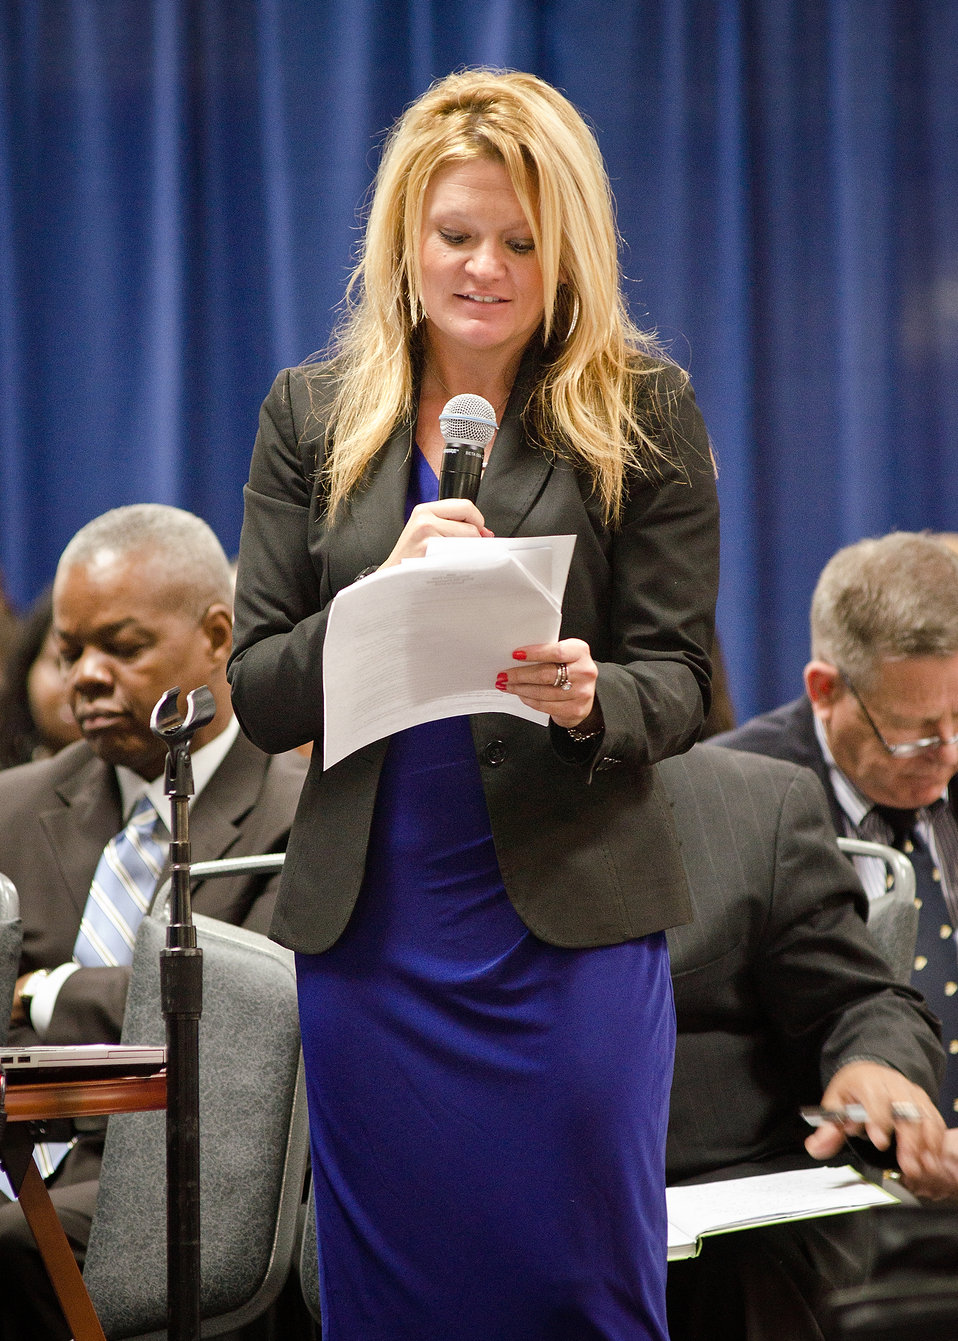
U. S. Department of Agriculture (USDA) Communications Director, Departmental Management, Administrative Solutions Project Jamie Wadzink reads a question emailed to Agriculture Secretary Tom Vilsack about the about the Blueprint for Stronger Service Initiative, during the Ask The Secretary event held in the South Building Cafeteria, in Washington, D.C., on Wednesday, March 21, 2012, The Blueprint for Stronger Service Initiative aims to build a modern and efficient service organization that is closely timed with technological innovations - and better suited to respond to 21st century agricultural challenges.